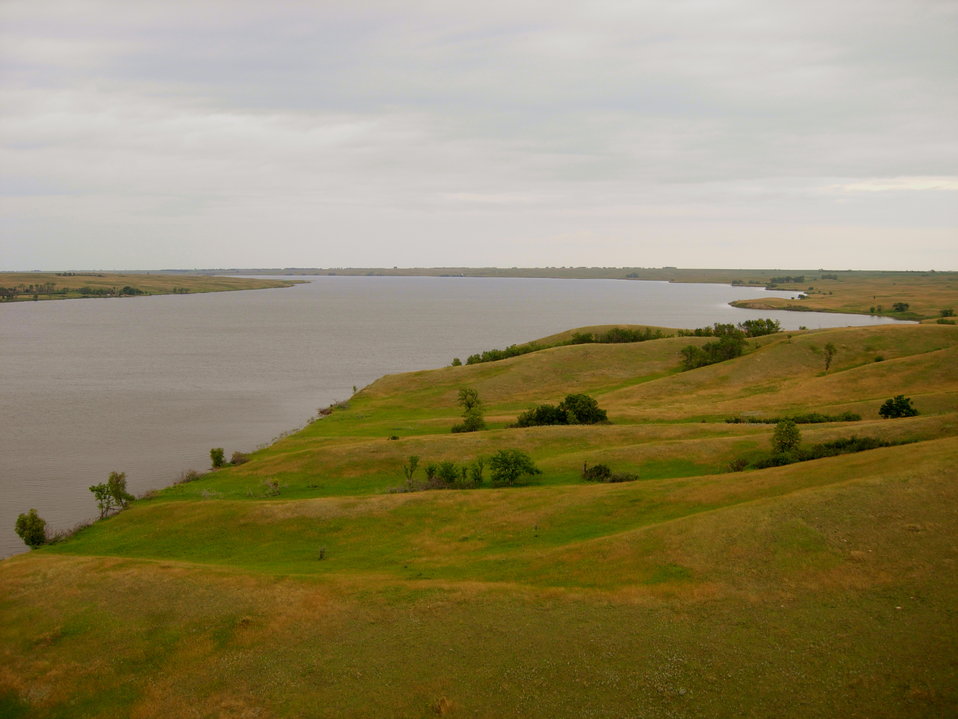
View From the Fire Tower

Lake Darling, a main focal point of Upper Souris National Wildlife Refuge, was named after political cartoonist Jay N. 'Ding' Darling.